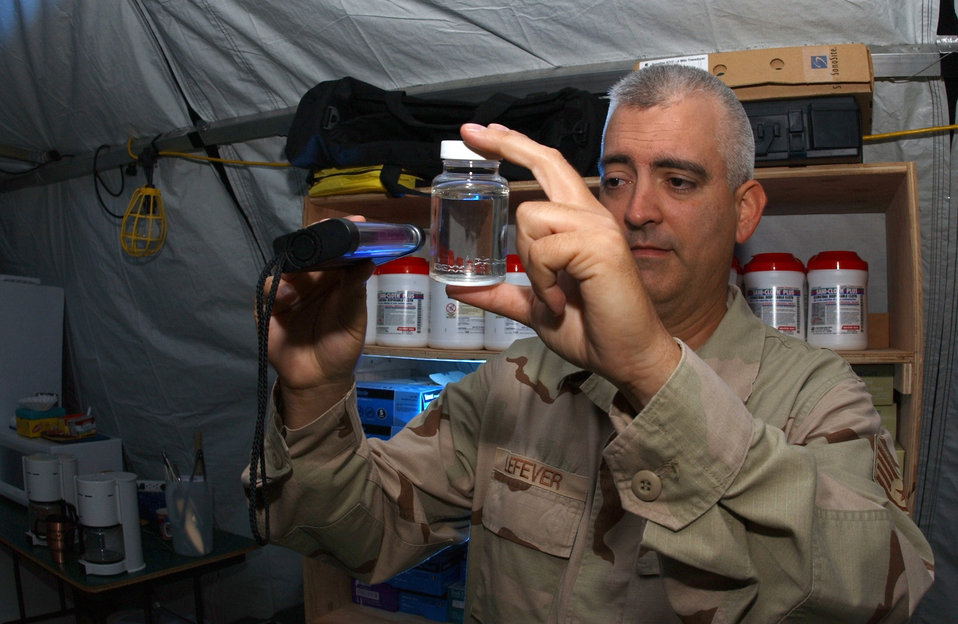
Deployed medics face gamut of medical conditions

OPERATION ENDURING FREEDOM -- Staff Sgt. Mark Lefever looks for bacteria in a water sample using a black light. He is a bioenvironmental engineer with the 40th Air Expeditionary Group at a forward-deployed location and is from Robins Air Force Base, Ga.